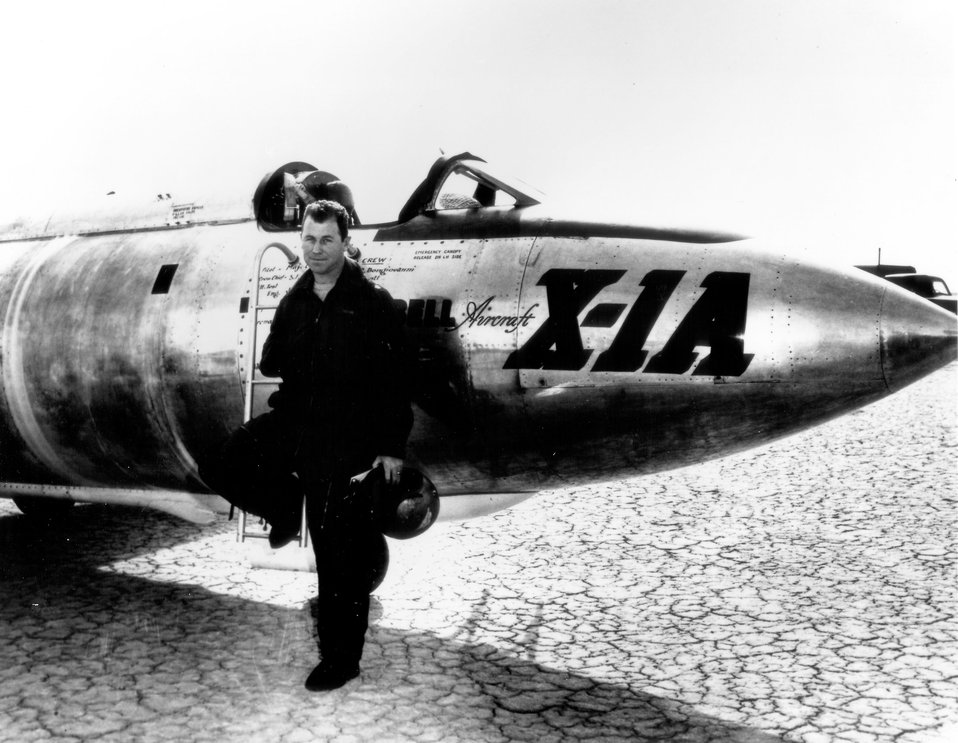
Capt. Yeager, Bell X-1A

Capt. Charles E. Yeager (shown standing in front of the Air Force's Bell-built X-1 supersonic research aircraft) became the first man to fly faster than the speed of sound in level flight on Oct. 14, 1947.